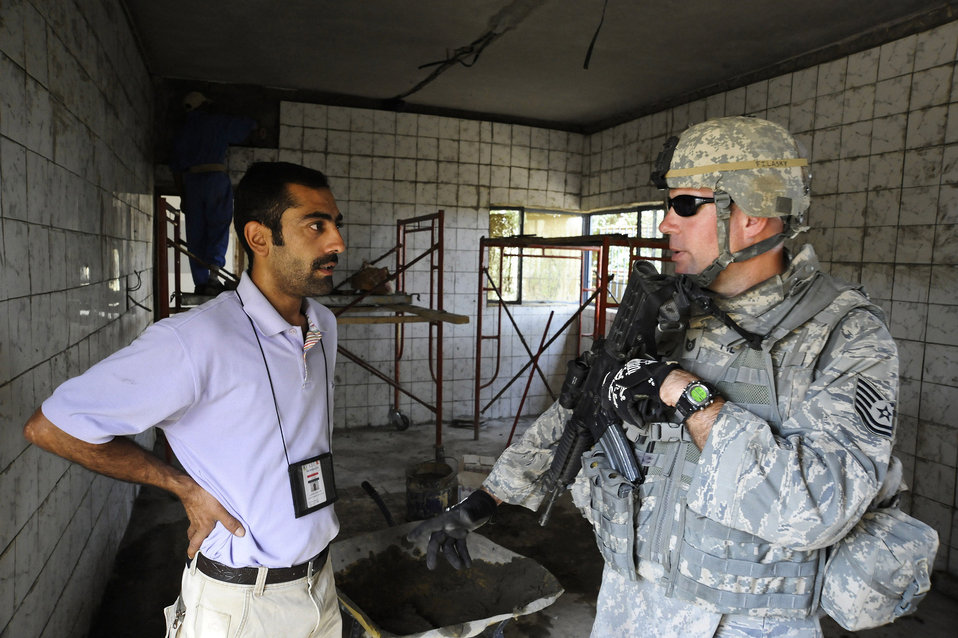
RED HORSE Airmen give Iraqis reason for hope

Tech. Sgt. Jason Filasky talks with a contractor about the tile being used for a battled damaged home in the city of Hawr Rajab, Iraq, Aug. 27. Sergeant Filasky is a contracting representative with the 557th Expeditionary RED HORSE Squadron.